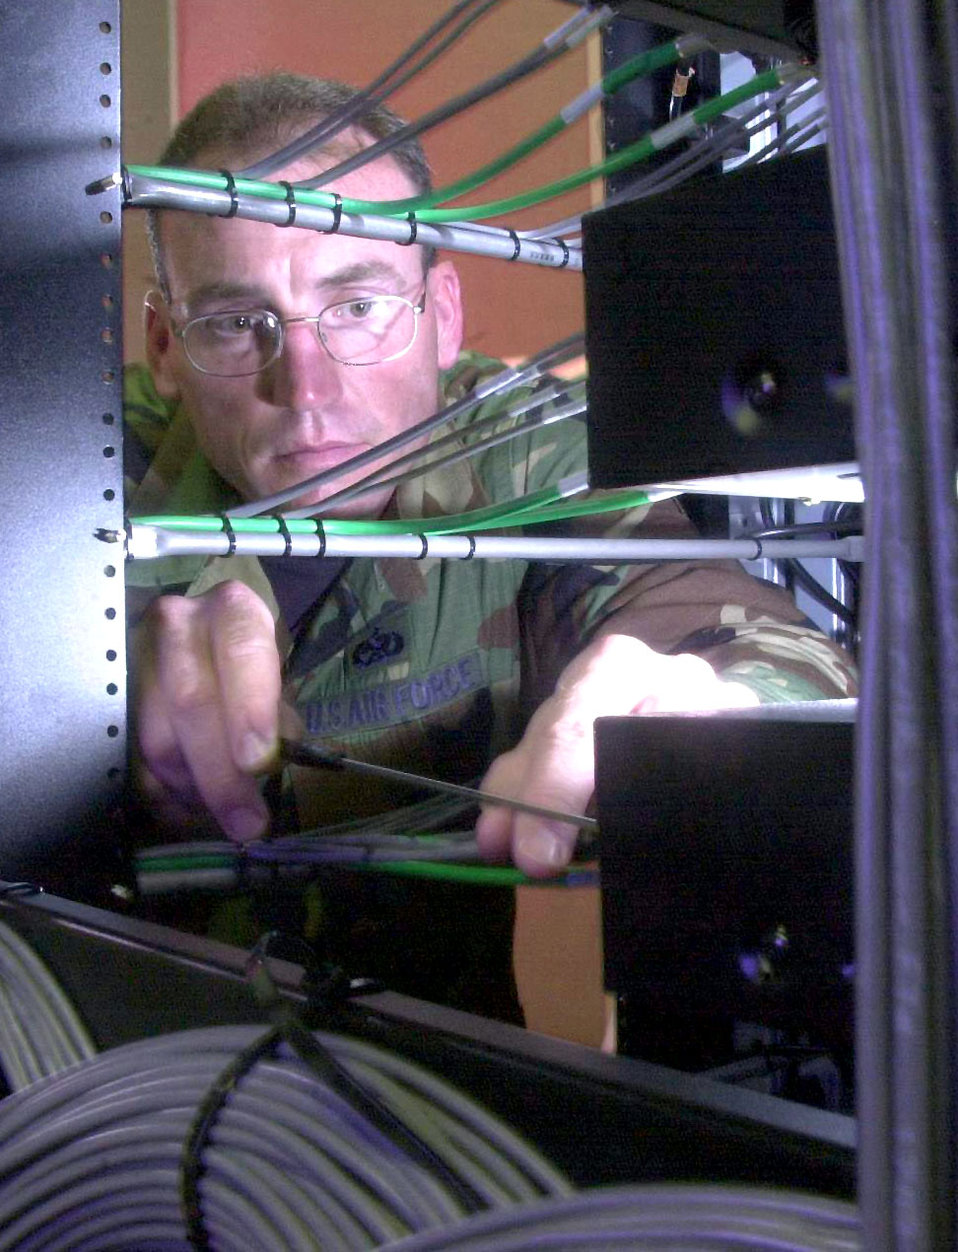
The hook up

YOKOTA AIR BASE, Japan -- Tech. Sgt Horace Leleaux, a broadcast maintenance engineer, tightens connectors on a satellite distribution system. Leleaux is assigned to the Air Force News Agency, operating location-C, here.